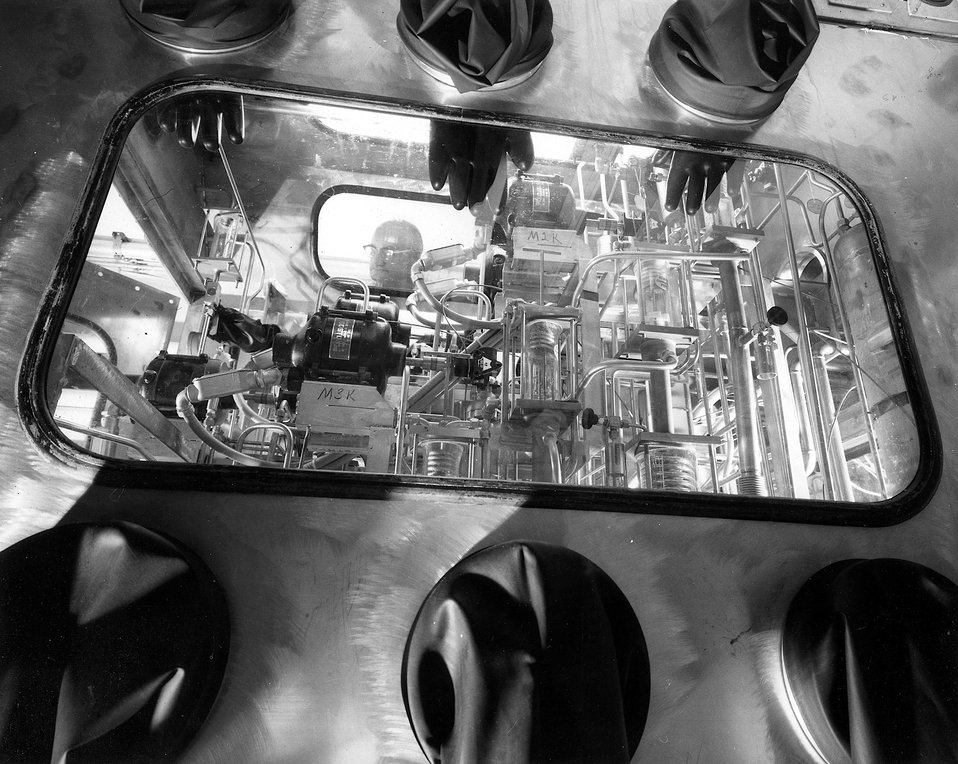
Extraction system for the preparation of uranium-233 and plutonium-239 bearing fuel. c. 1968